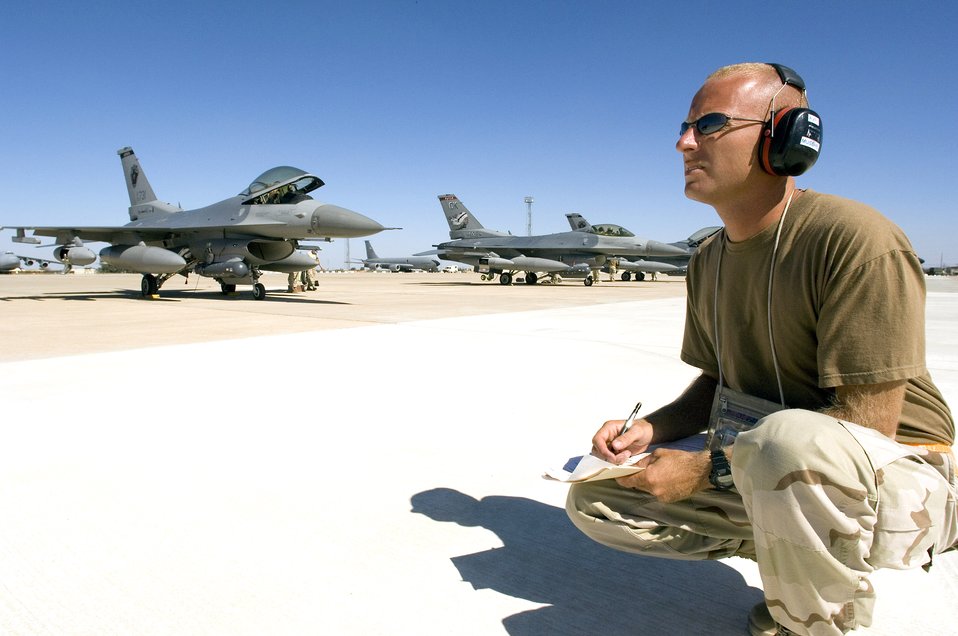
'Coronet East' flies home

MORON AIR BASE, Spain -- Master Sgt. Brad Musshell gathers information for flight debriefs here. The avionics specialist from the 180th Fighter Wing at Toledo, Ohio, is on his way home after supporting Operation Iraqi Freedom.